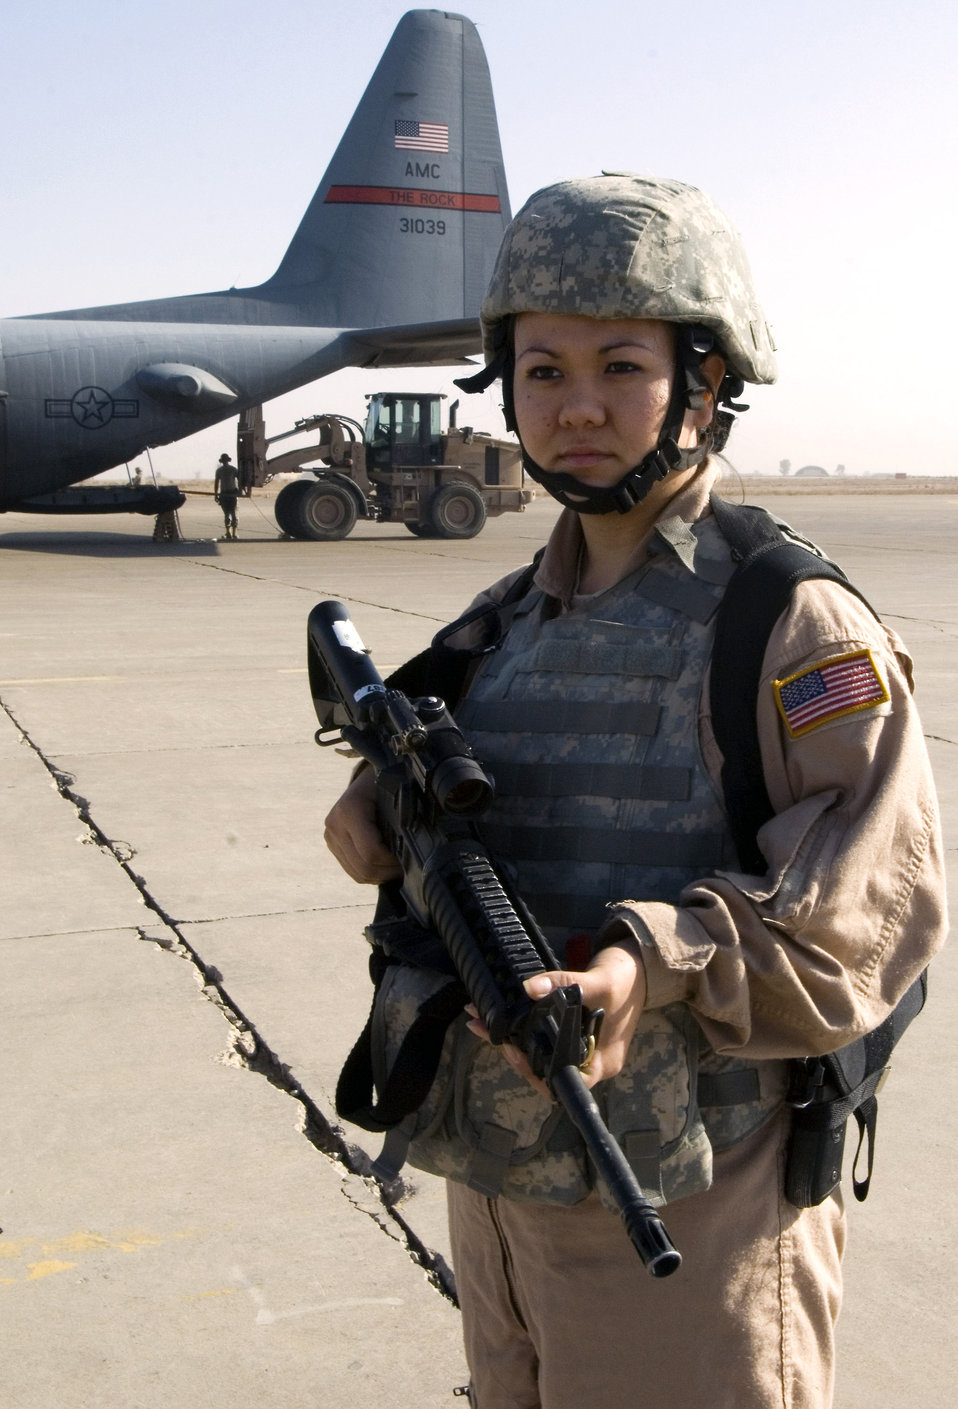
Airmen provide FAST coverage

Senior Airman Rosie Munoz scans the area for threats while a 777th Expeditionary Airlift Squadron C-130 Hercules unloads cargo Nov. 22 at a remote location in Iraq. Airman Munoz is a member of a 332nd Expeditionary Security Forces Squadron Fly Away Security Team. She grew up in Seoul, South Korea, and calls El Paso, Texas, home.